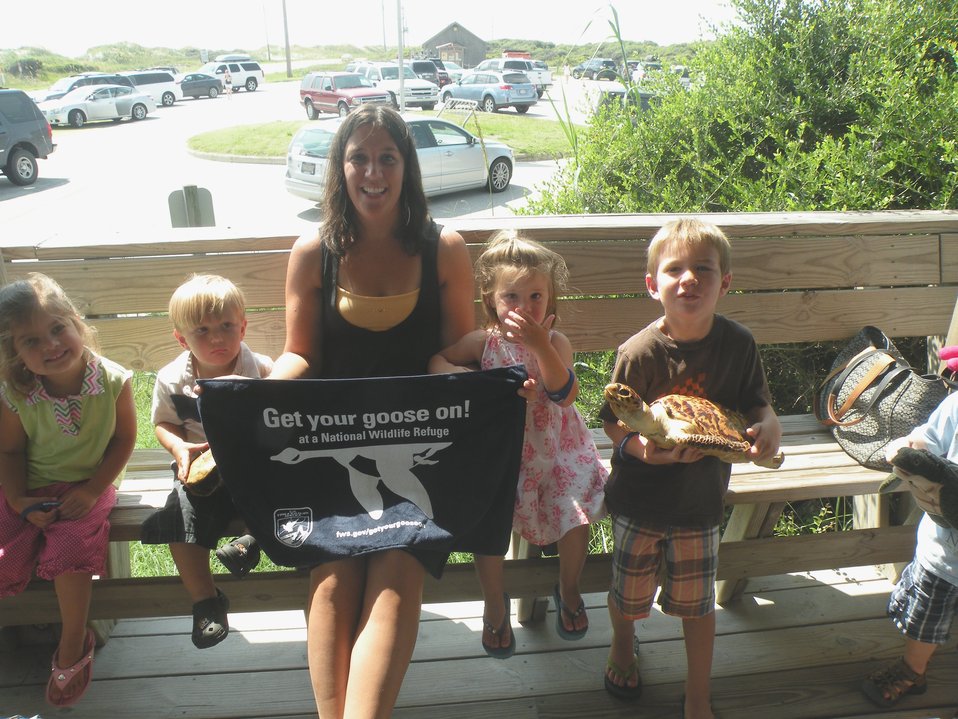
Get Your Goose On!

Outer Banks Mommy and Me group enjoy learning about turtles and Get there Goose on!

Cindy Heffley/USFWS